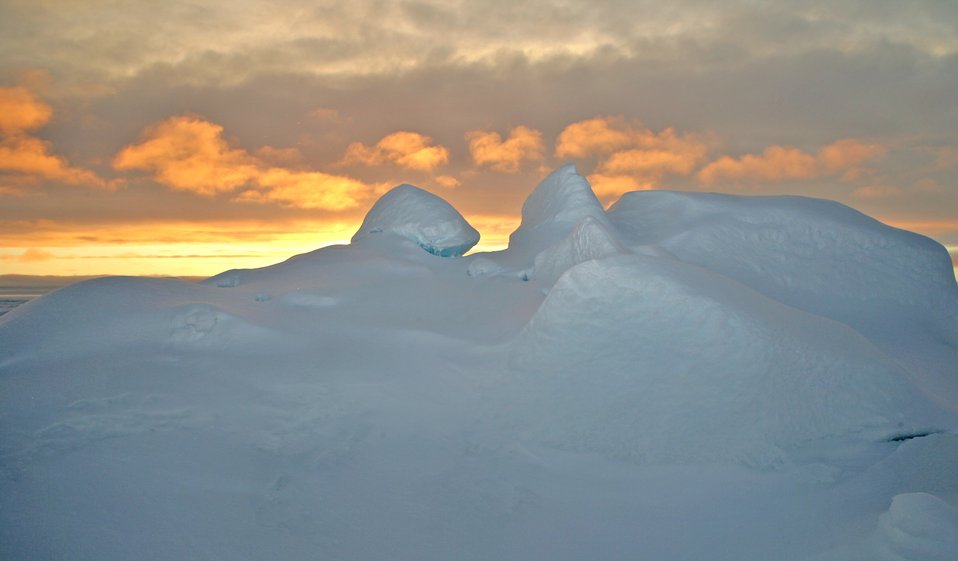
A spectacular Arctic sunset.